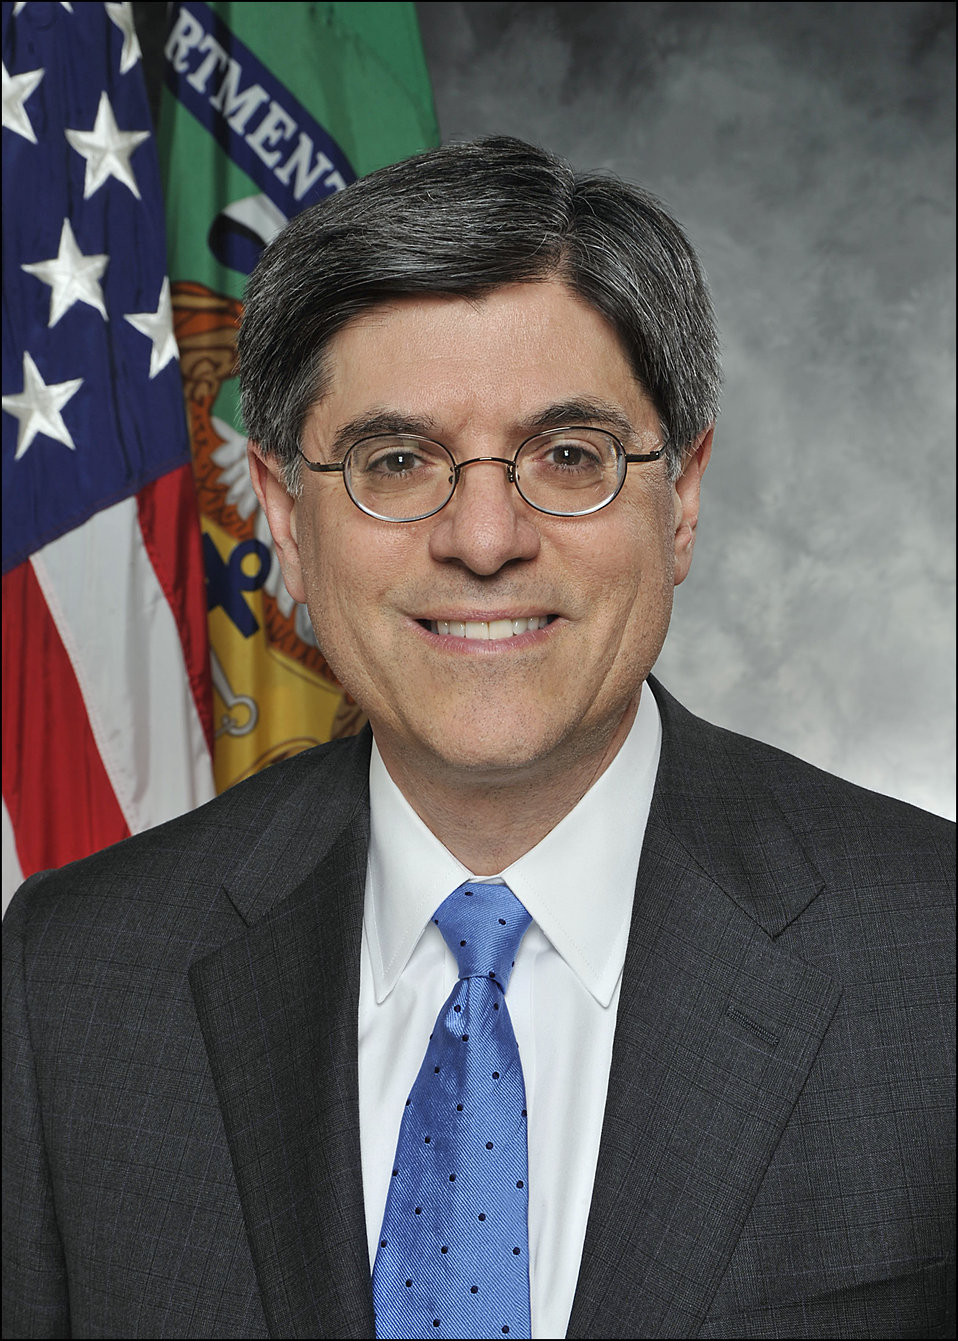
Official portrait of the U.S. Secretary of the Treasury Jack Lew. Photo taken on February 28, 2013